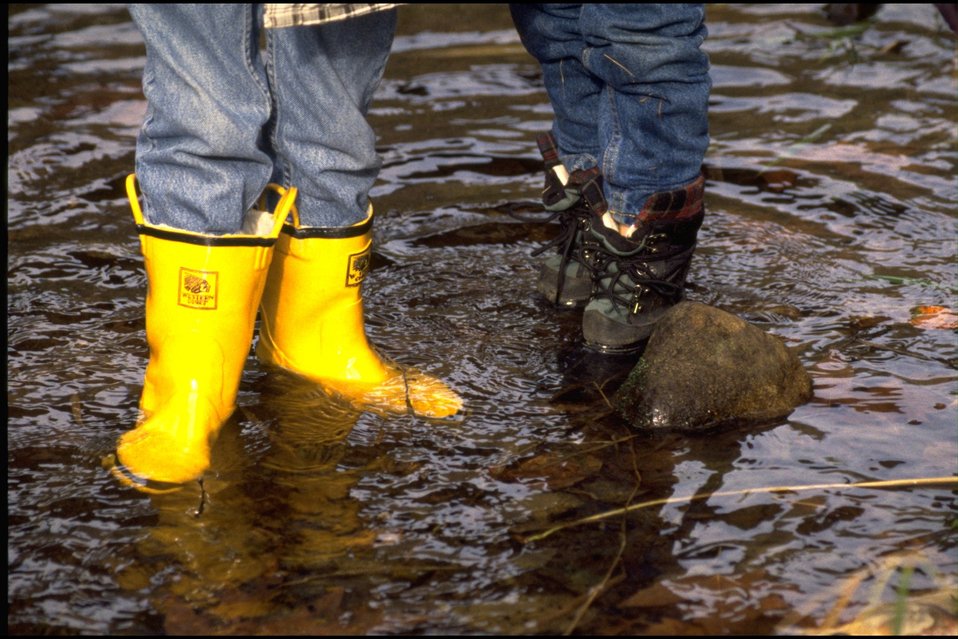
Salmon Watch Program (Fish Creek) - Crow/Applegate Schools.